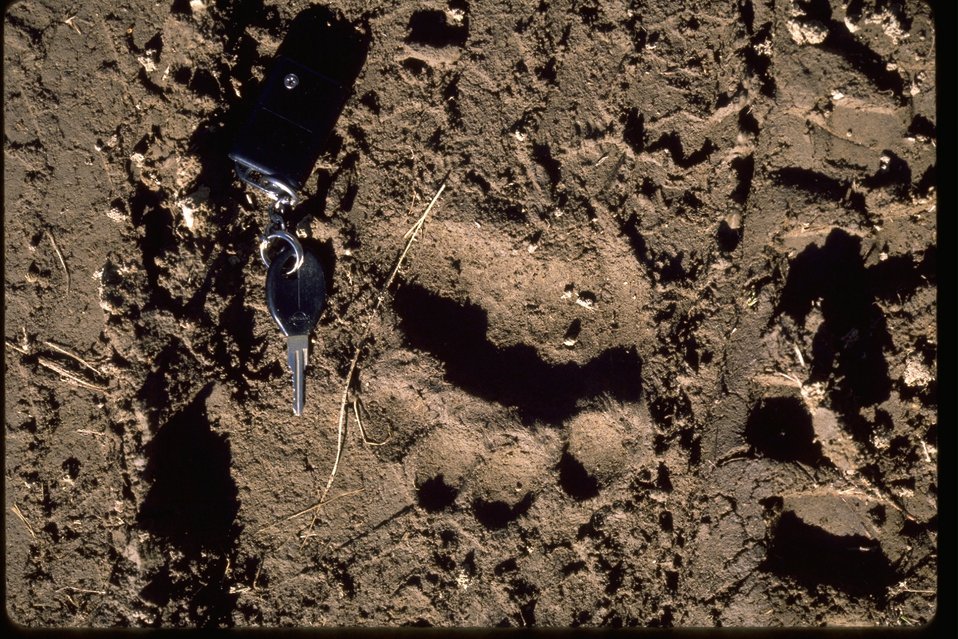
Cut bear tracks on Schoheim Road, Lone Pine Ridge.